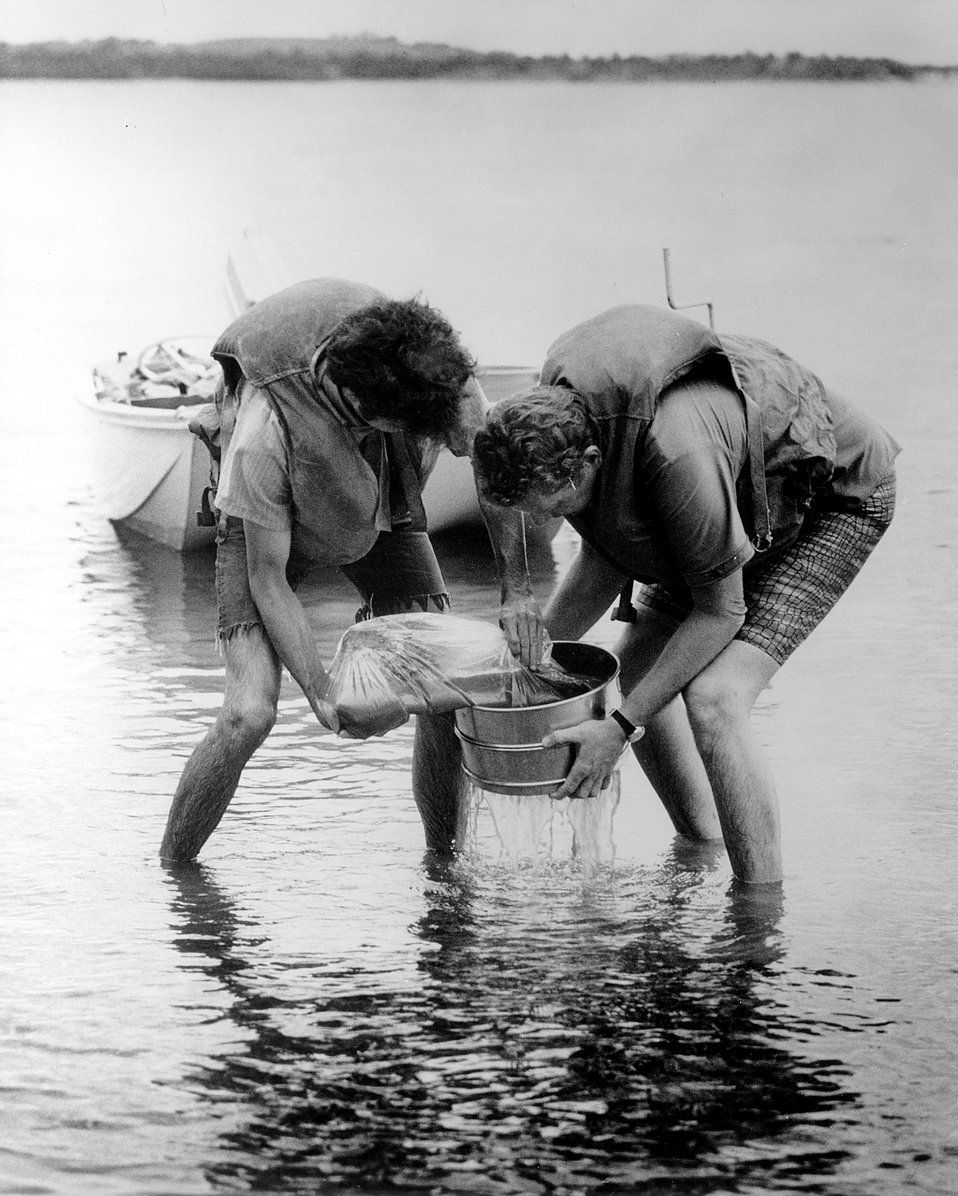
Researchers of the U.S. Atomic Energy Commission's Puerto Rico Nuclear Center obtain bottom samples from a turtle grass bed. Circa 1972.